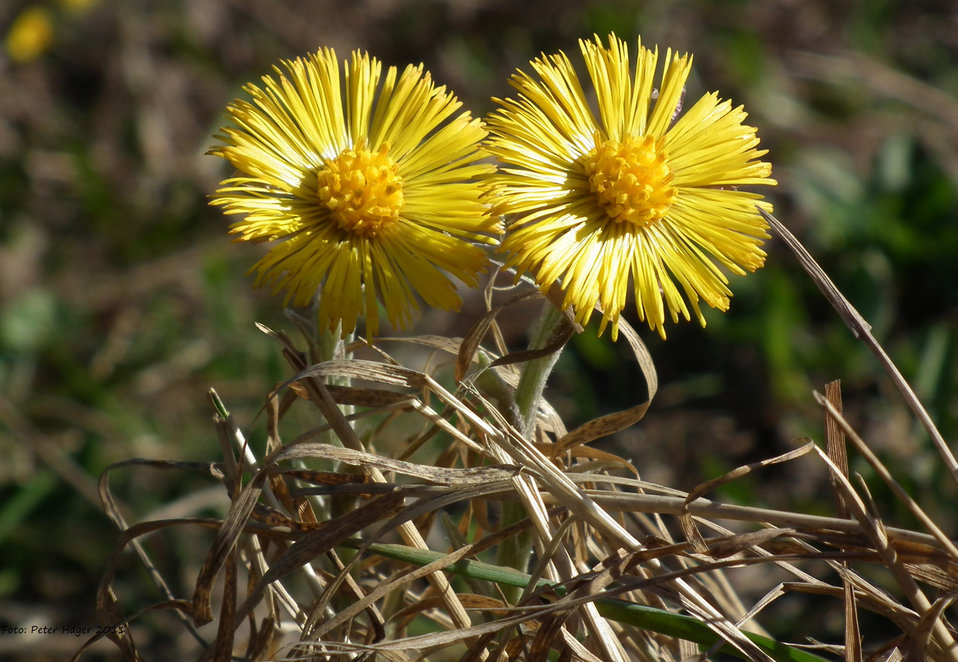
Tussilago farfara, known as coltsfoot. one of the earliest spring flowers.